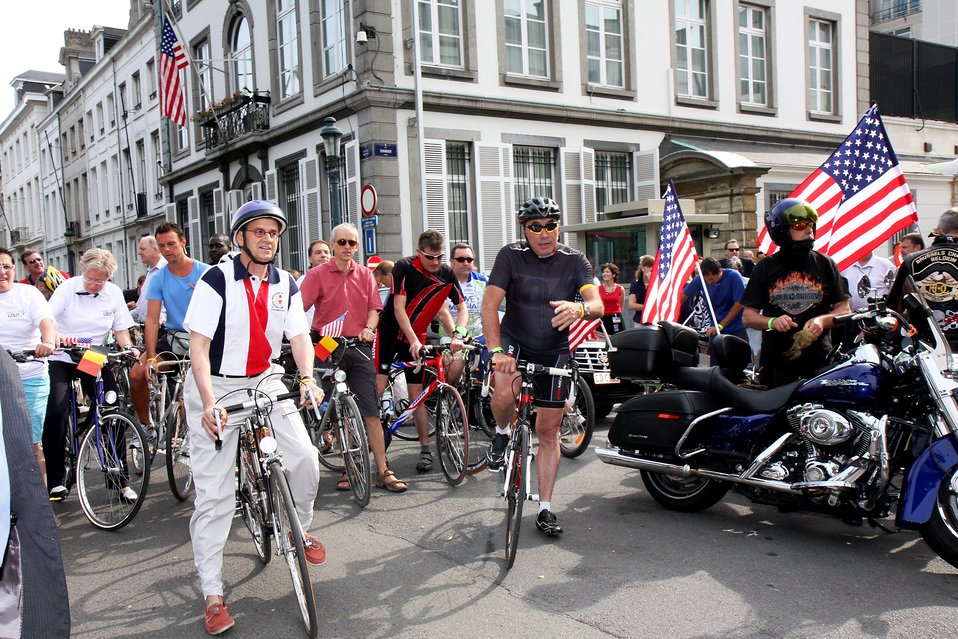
July 4th Celebration at U.S. Embassy in Belgium

U.S. Embassy Brussels celebrates the America's Independence Day on July 1, 2010, in Brussels, Belgium.